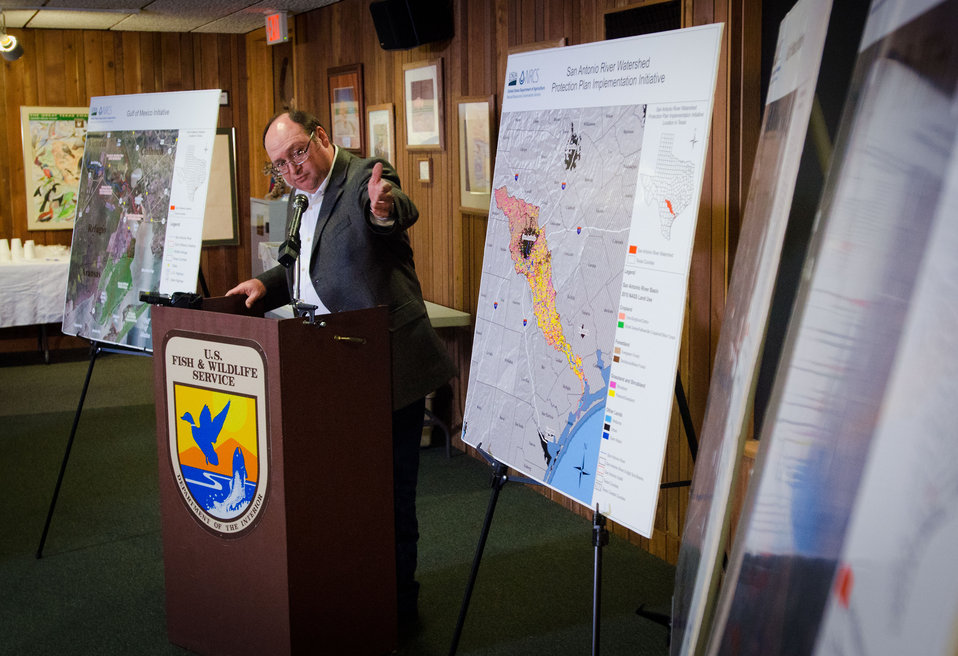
U.S. Department of Agriculture (USDA) Natural Resources Conservation Service (NRCS) State Conservationist Salvador Salinas with Federal and state partners, including representatives from U.S. Fish and Wildlife Service and local soil and water conservation districts (SWCDs) held a press conference at the Aransas National Wildlife Refuge, in Austwell, TX, on Friday, Dec. 16, 2011. Salinas covered the recent announcement of the USDA-NRCS Gulf of Mexico Initiative (GoMI) efforts to improve water quality, habitat, and the health of the Gulf ecosystem. “Launching this initiative is a top priority for NRCS in Texas because the Gulf of Mexico is one of our state’s premier natural resources. It provides vital habitat for wildlife, and creates jobs in industries that depend upon them. The health of this resource is essential to Texas as well as to the nation,” said Salinas.
The Texas initiative focuses on three watersheds in Refugio, Calhoun, Victoria and Aransas counties and ultimately the Gulf of Mexico. “What is really compelling about GoMI and other similar conservation efforts is that they prove that Texas farmers and ranchers not only feed and clothe us and power our vehicles, but they can also help protect and restore our rivers and provide more habitat for wildlife,” stated Salinas. “That’s why it is important that this conservation project is not about taking productive farm land out of production. This is a working lands initiative, so that not only are we helping to restore the health of the Gulf, but we’re also helping to sustain and enhance the productivity of the Gulf’s farms and ranches.”